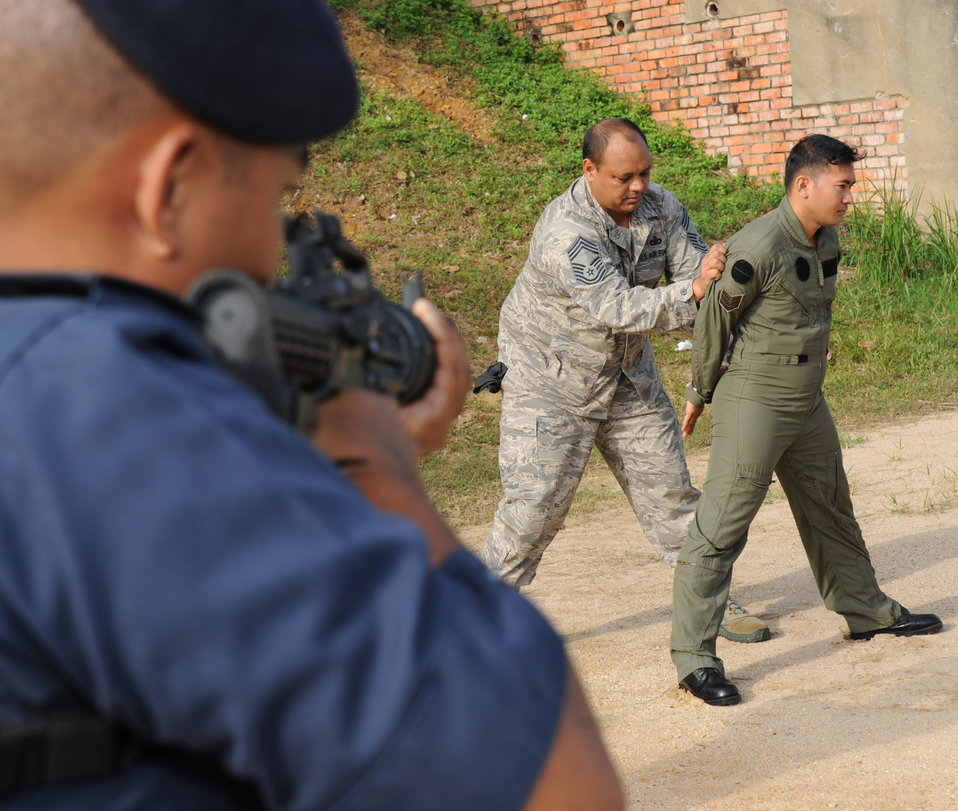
Cope Taufan 2012

Chief Master Sgt. William Makaneole, a Pacific Air Forces plans and programs project officer, shows Royal Malaysian Air Force airmen from Provost Squadron 104 how to search a simulated suspect during a subject matter expert exchange at Cope Taufan 2012 at TUDM Butterworth on April 5, 2012.